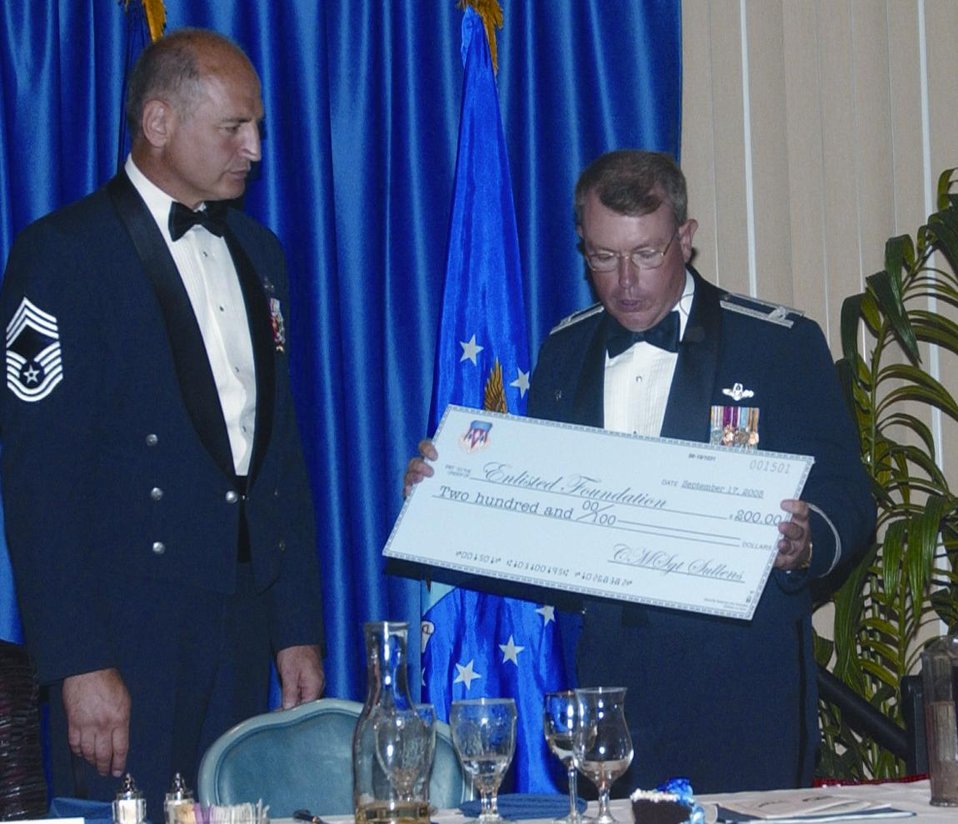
Big bird in 'da house

EDWARDS AIR FORCE BASE, Calif. -- A C-17 Globemaster III undergoes testing here to evaluate the compatibility between existing and upgraded avionics hardware.